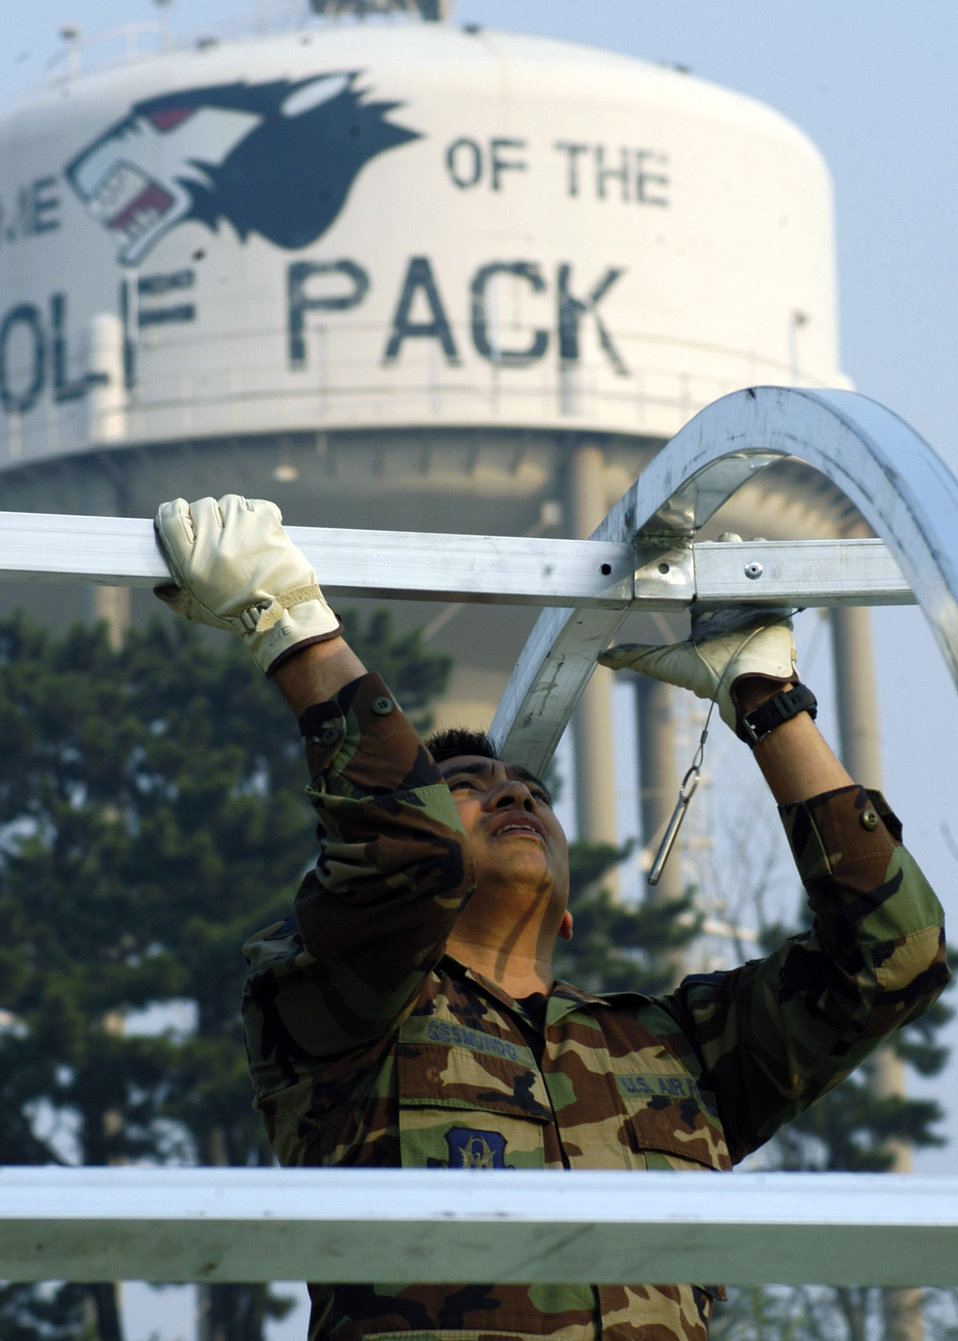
Airmen deploy to Kunsan to practice medical skills

Tech. Sgt. Reggie Gesmundo secures beams while assembling a medical tent Oct. 23 at Kunsan Air Base, South Korea. Airmen from the Air Force Reserve Command's 944th Medical Squadron at Luke Air Force Base, Ariz., and other reservists from the 10th and 4th Air Forces are deployed here to receive expeditionary medical system training. Sergeant Gesmundo is assigned to Luke AFB.